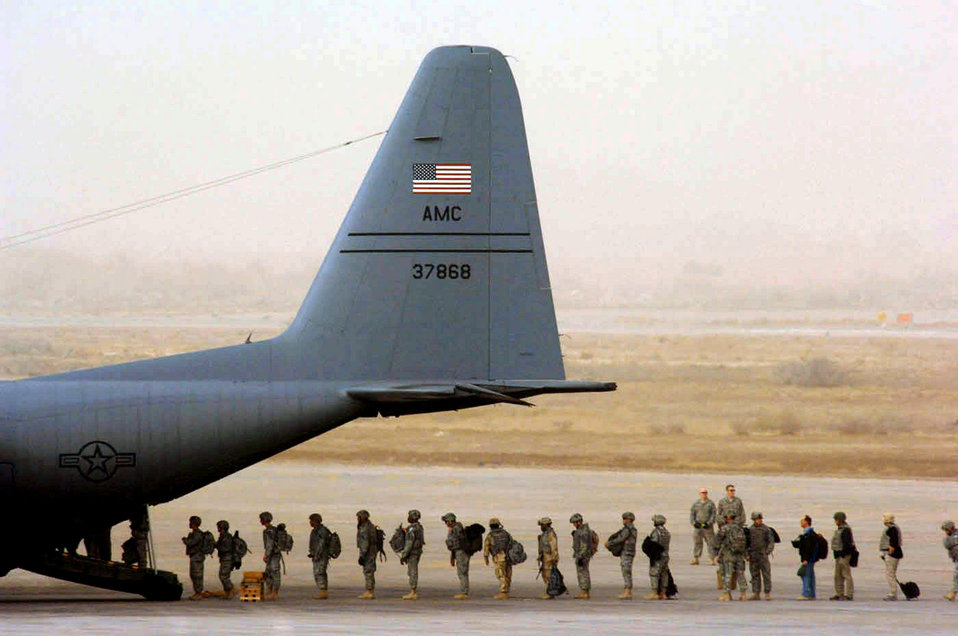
Now boarding

Personnel supporting Operation Iraqi Freedom load onto a C-130 Hercules during a dust storm Jan. 30 at Sather Air Base, Iraq. Sather AB is located on the west side of Baghdad International Airport and base Airmen move 6,200 passengers weekly and more than 1,700 tons of cargo weekly.